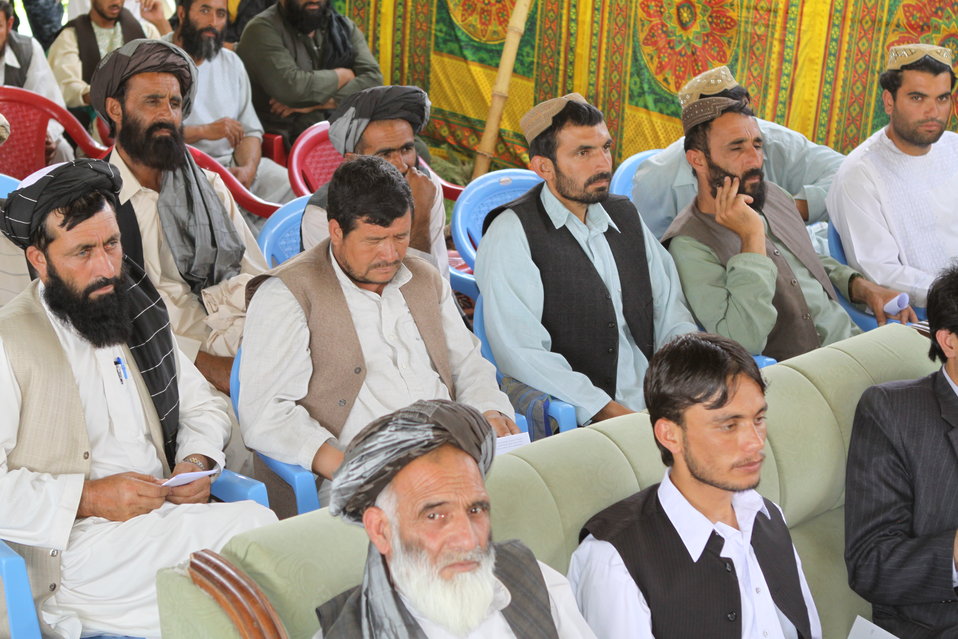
Bolan Poultry Farm